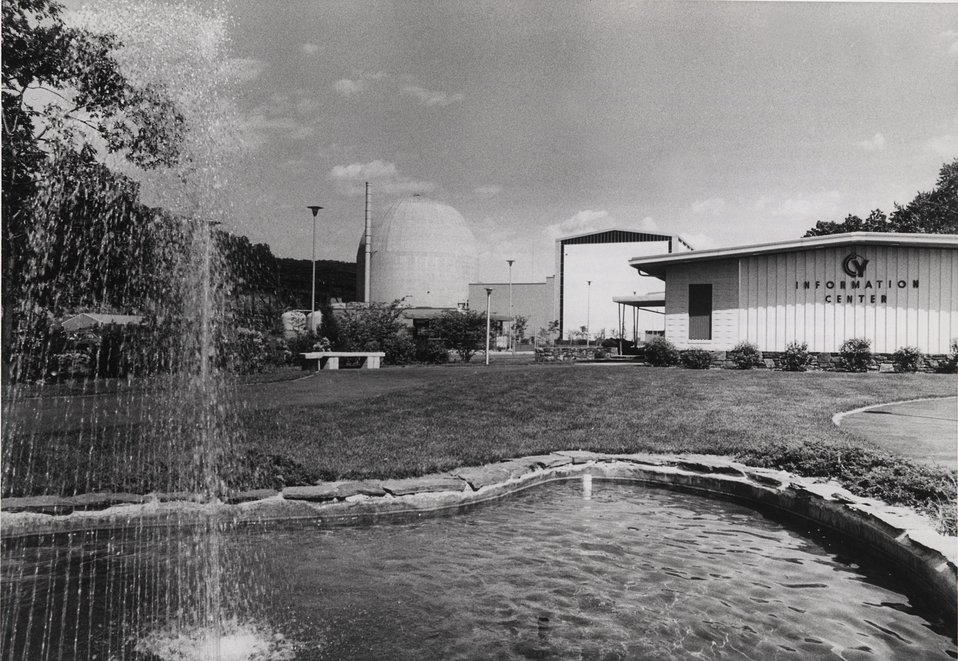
Haddam Neck.